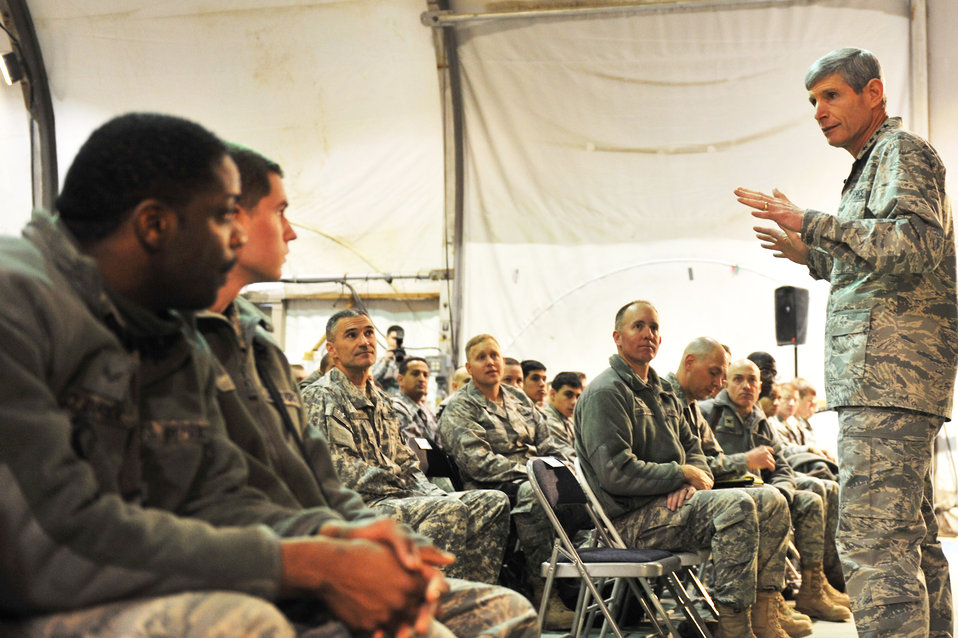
CSAF meets with Airmen during Bagram visit

Air Force Chief of Staff Gen. Norton Schwartz speaks to Airmen Jan. 19, 2011, during an “all call” at Bagram Airfield, Afghanistan. General Schwartz talked about his vision for the Air Force and answered questions from Airmen.